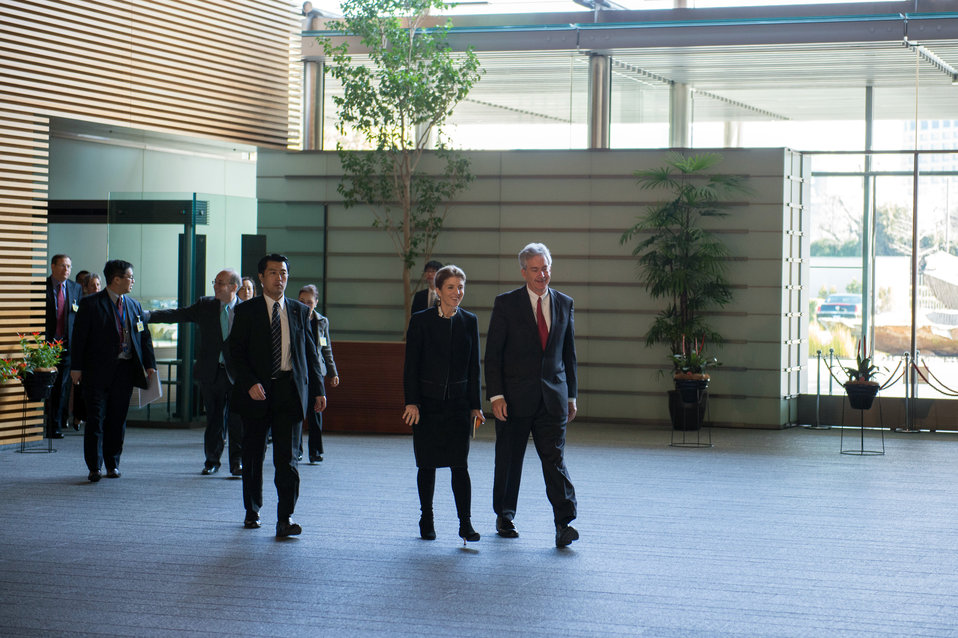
Deputy Secretary Burns and Ambassador Kennedy Visit the Japanese Prime Minister’s Residence

U.S. Deputy Secretary of State William J. Burns, with U.S. Ambassador to Japan Caroline Kennedy, arrives in Kantei, the Japanese Prime Minister’s Official Residence, for a meeting with Chief Cabinet Secretary Yoshihide Suga in Tokyo, Japan, on January 24, 2014.